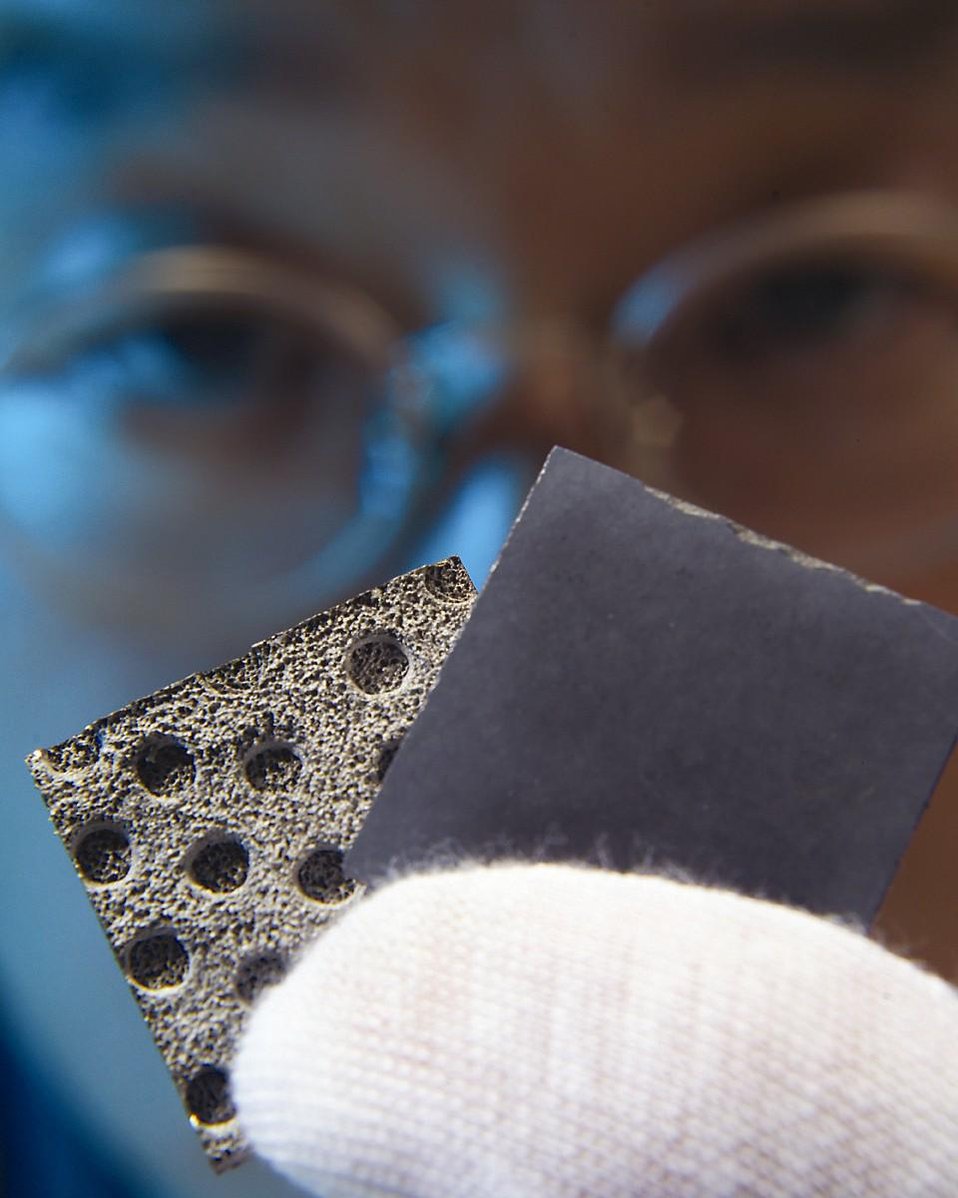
ANL CHEMIST HOLDING THE METALLIC BI-POLAR PLATES THAT MAKE TUFFCELL STRONGER AND EASIER TO FABRICATE.

A CRITICAL MEASURE OF A FUEL CELL'S USEFULNESS IS ITS POWER OUTPUT AT VARIOUS ELECTRICAL LOADS WHEN SUPPLYING FUEL (ANODE GAS) AND OXIDANT (CATHODE GAS) TO THE CELL. A RUGGED, SOLID-OXIDE FUEL CELL DEVELOPED AT ARGONNE, CALLED TUFFCELL, MAY PROVIDE A CLEAN, AFFORDABLE ALTERNATIVE TO THE NOISY, EMISSIONS-PRODUCING OVERNIGHT IDLING OF TRACTOR-TRAILER TRUCKS. ITS DESIGN FEATURES METAL SUPPORTS FOR HIGHER MECHANICAL STRENGTH, EASIER FABRICATION AND INCREASED PERFORMANCE, AT A LOWER COST THAN CURRENT SOLID-OXIDE FUEL CELLS.